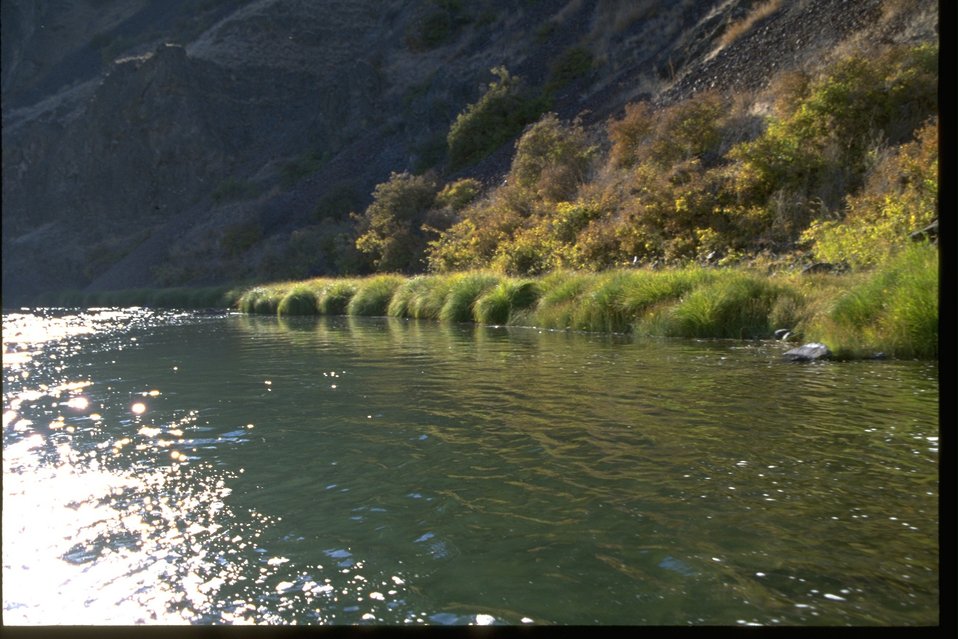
Riparian vegetation along the John Day River.